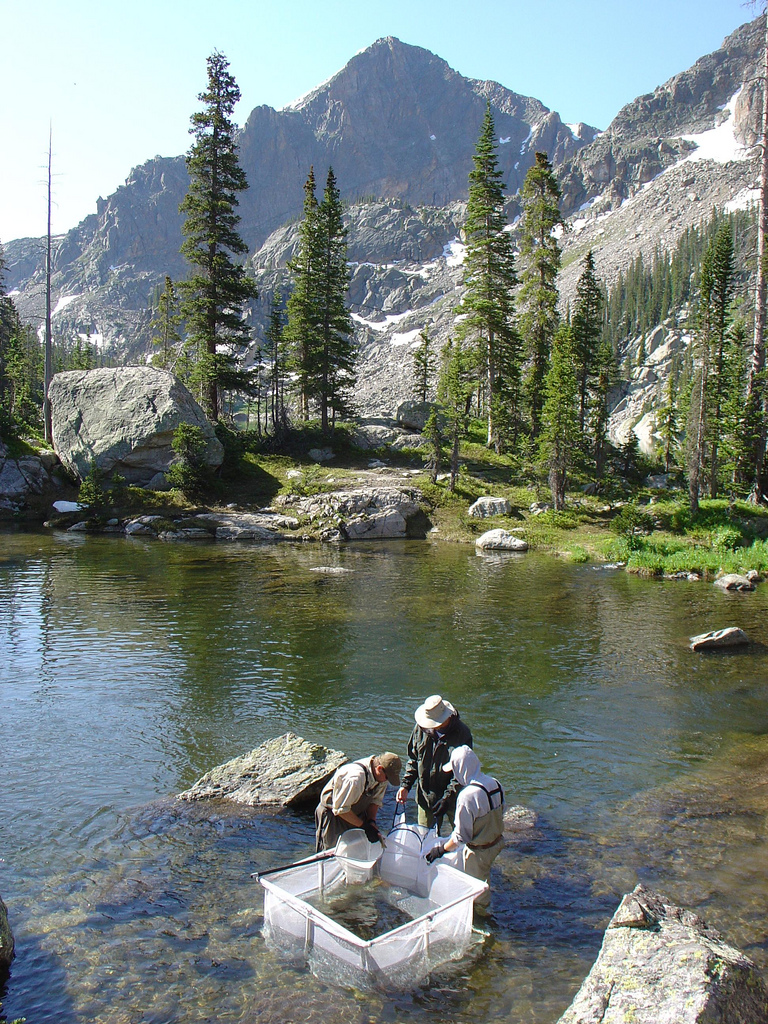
Colorado River cutts in a pen.

Fish biologists with Colorado Division of Wildlife and the USFWS's Colorado Fish and Wildlife Conservation Office collect cutthroat trout from Lake Nanita in Rocky Mountain National Park. Read Mike Stempel's muse on the Western Native Trout Initiative in No Trout Left Behind at www.fws.gov/eddies. Chris Kennedy/USFWS photo.